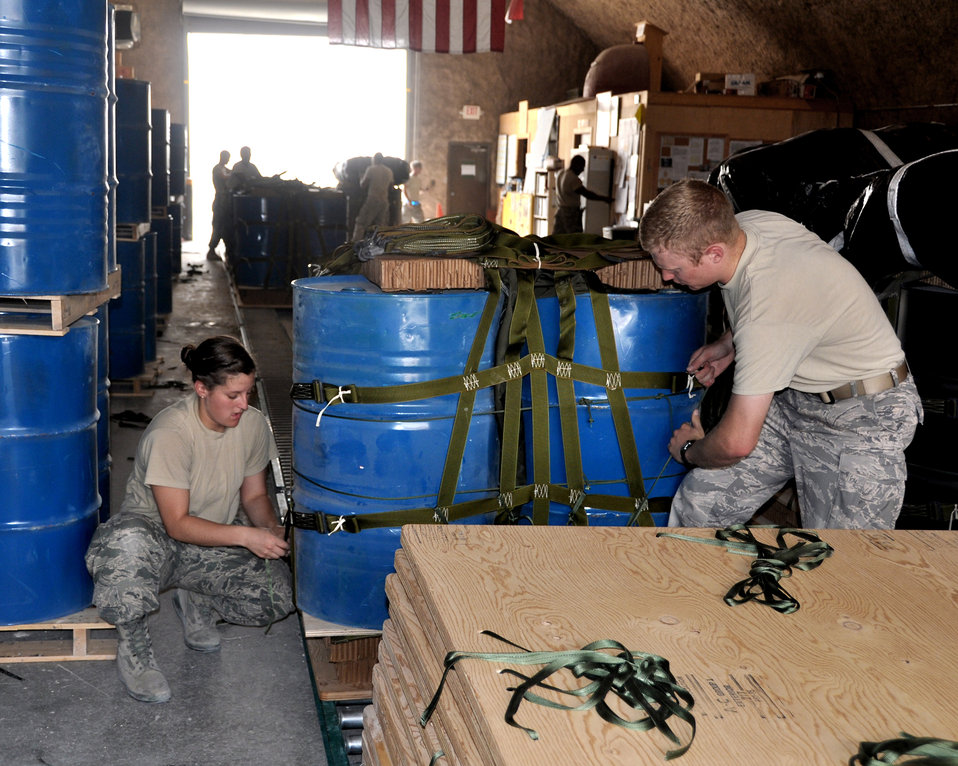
USAFA

U.S. Air Force Academy Cadet 2nd Class Erin Doran and USAFA Cadet 1st Class Jordan Wittman work together to expedite the bundling process with U.S. Army Riggers June 18, 2011, in Southwest Asia. Cadets Doran and Wittman are taking part in